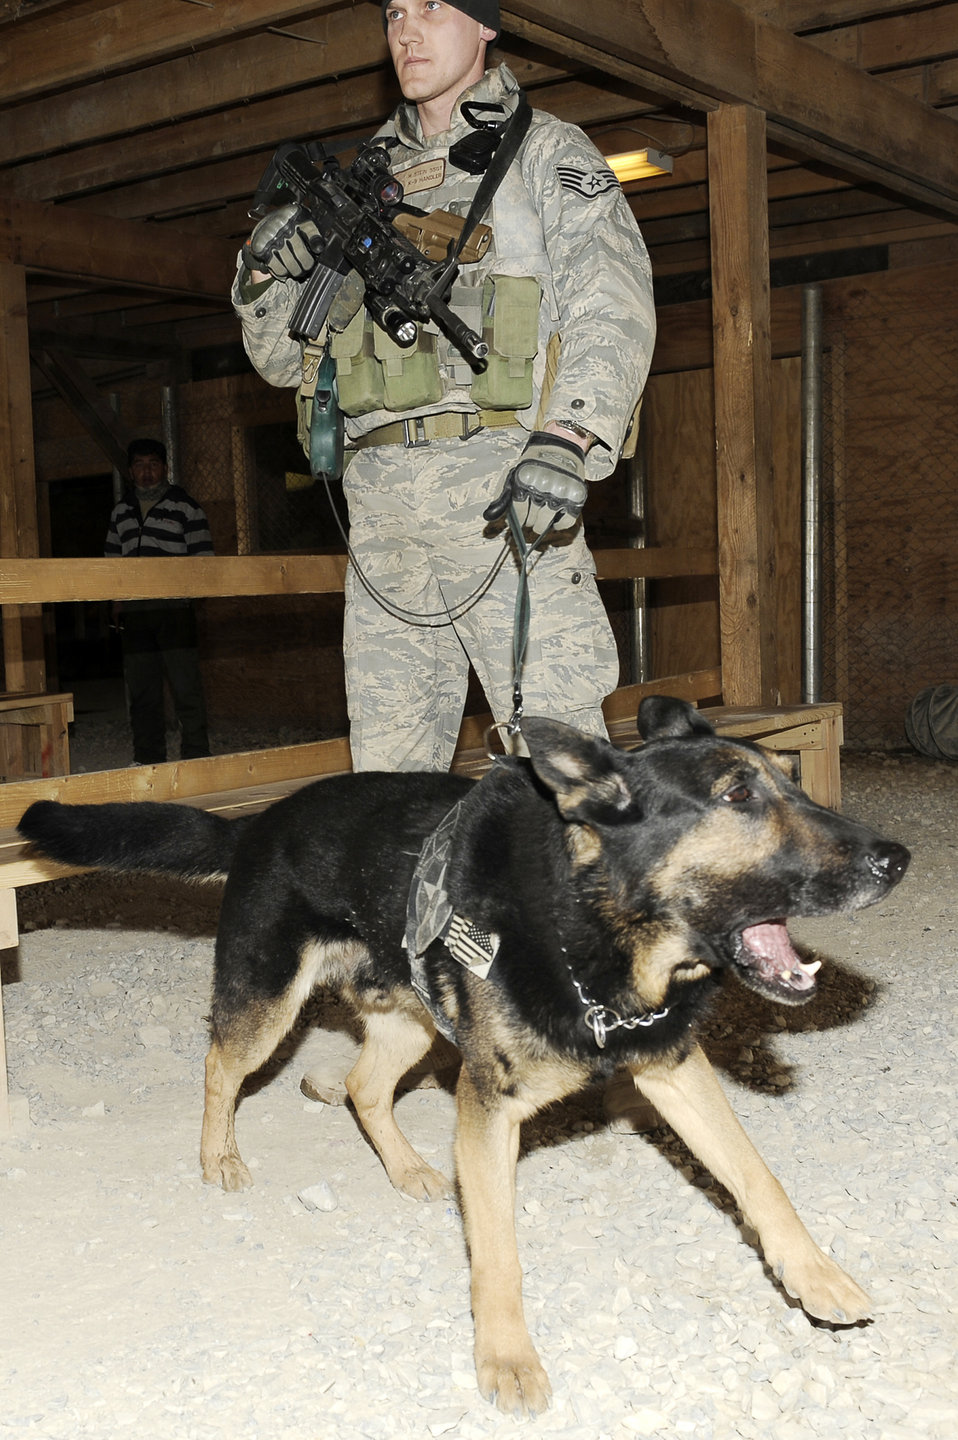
It's a dog's life at Bagram

Artus, a military working dog, shows off his bark as he and Staff Sgt. Mitchell Stein work at an entry control point Feb. 2, 2010, on Bagram Airfield, Afghanistan. Sergeant Stein and Artus are assigned to the 455th Expeditionary Security Forces Squadron, and are deployed from Spangdahlem Air Base, Germany.